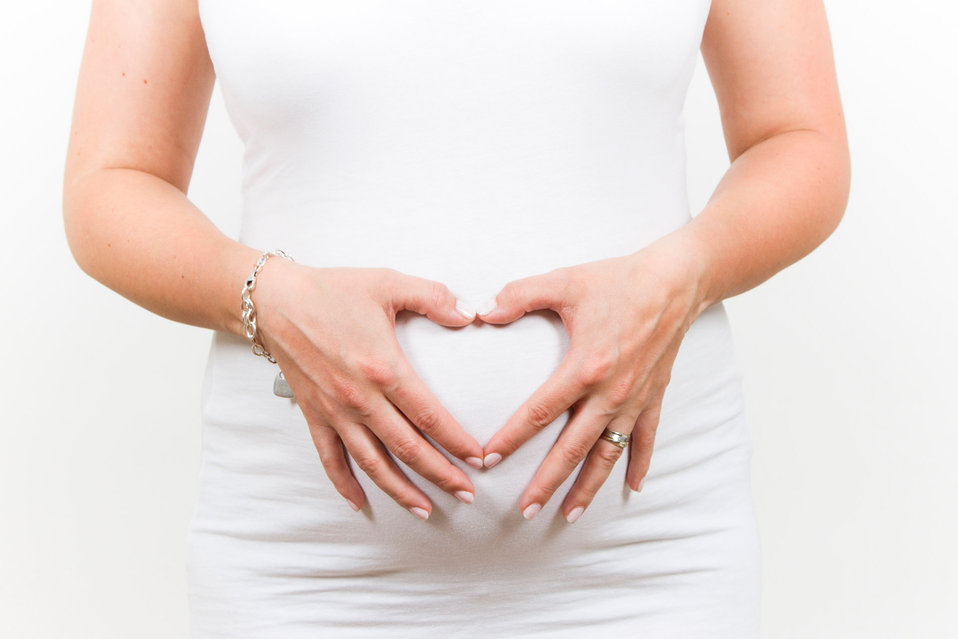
Pregnancy bump.